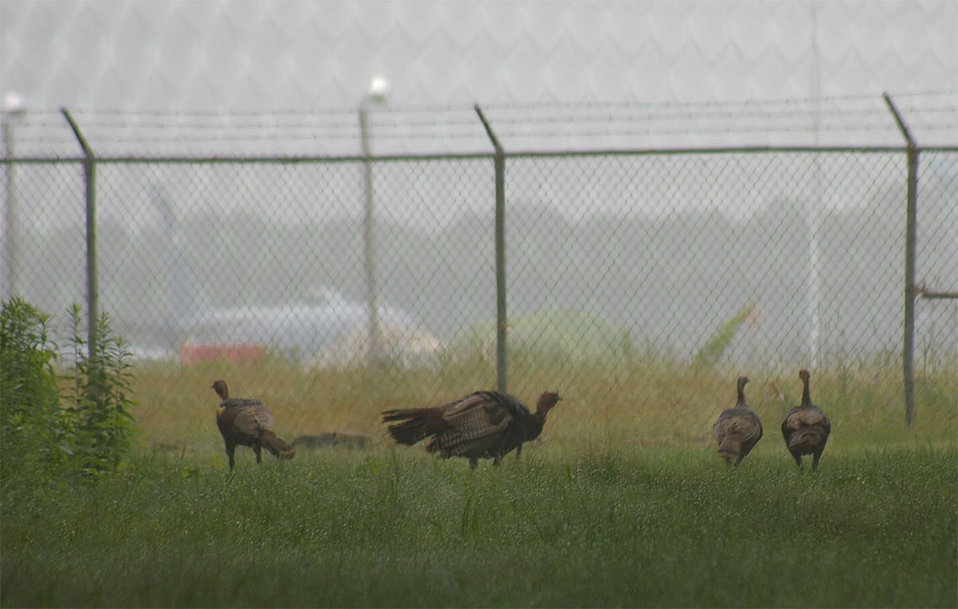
Wild turkeys wander close to an airfield in New Hampshire. USDA Wildlife Services biologists researched solutions to prevent these large birds from wandering too close to aircraft.